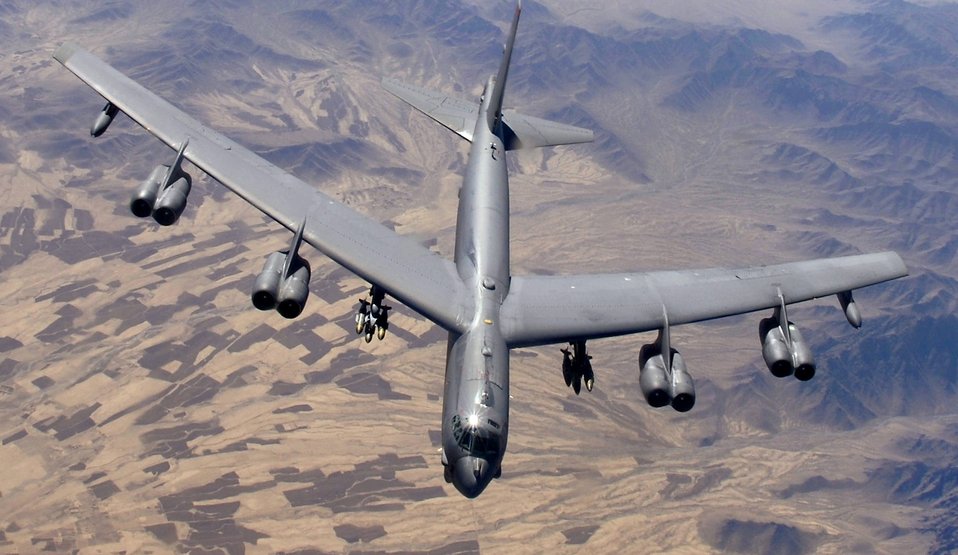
Close air support

SOUTHWEST ASIA (AFPN) -- A B-52 Stratofortress, flown by Capt. Will Byers and Maj. Tom Aranda, prepares for refueling over Afghanistan during a close-air-support mission. The crew is deployed from the 2nd Bomb Wing, Barksdale Air Force Base, La.